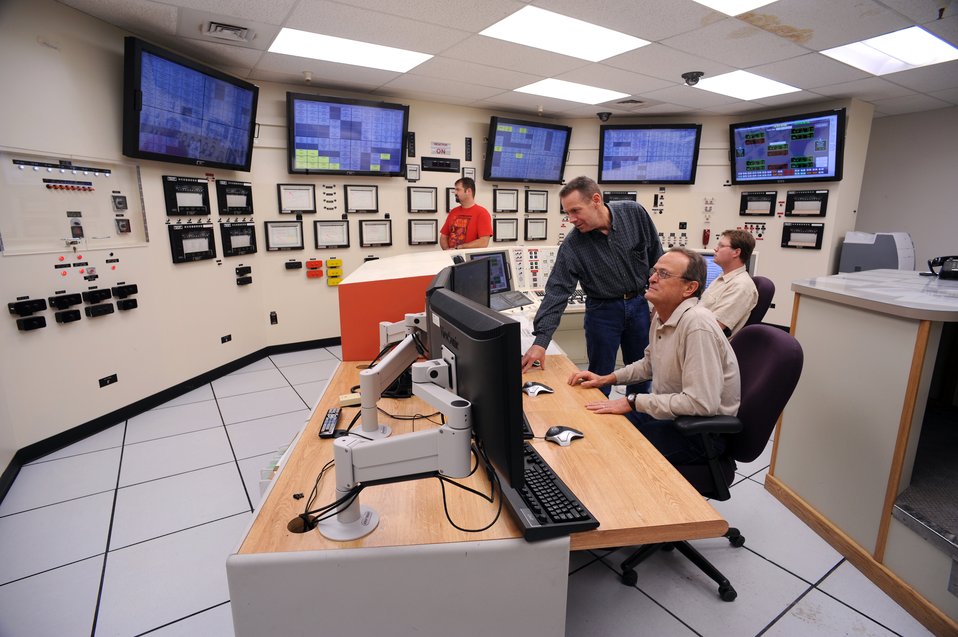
OPERATORS AT IDAHO NATIONAL LABORATORY'S ADVANCED TEST REACTOR TRAIN AND PRACTICE FOR UNUSUAL EVENTS OR CONDITIONS IN THIS EXACT REPLICA OF THE ATR CONTROL ROOM.